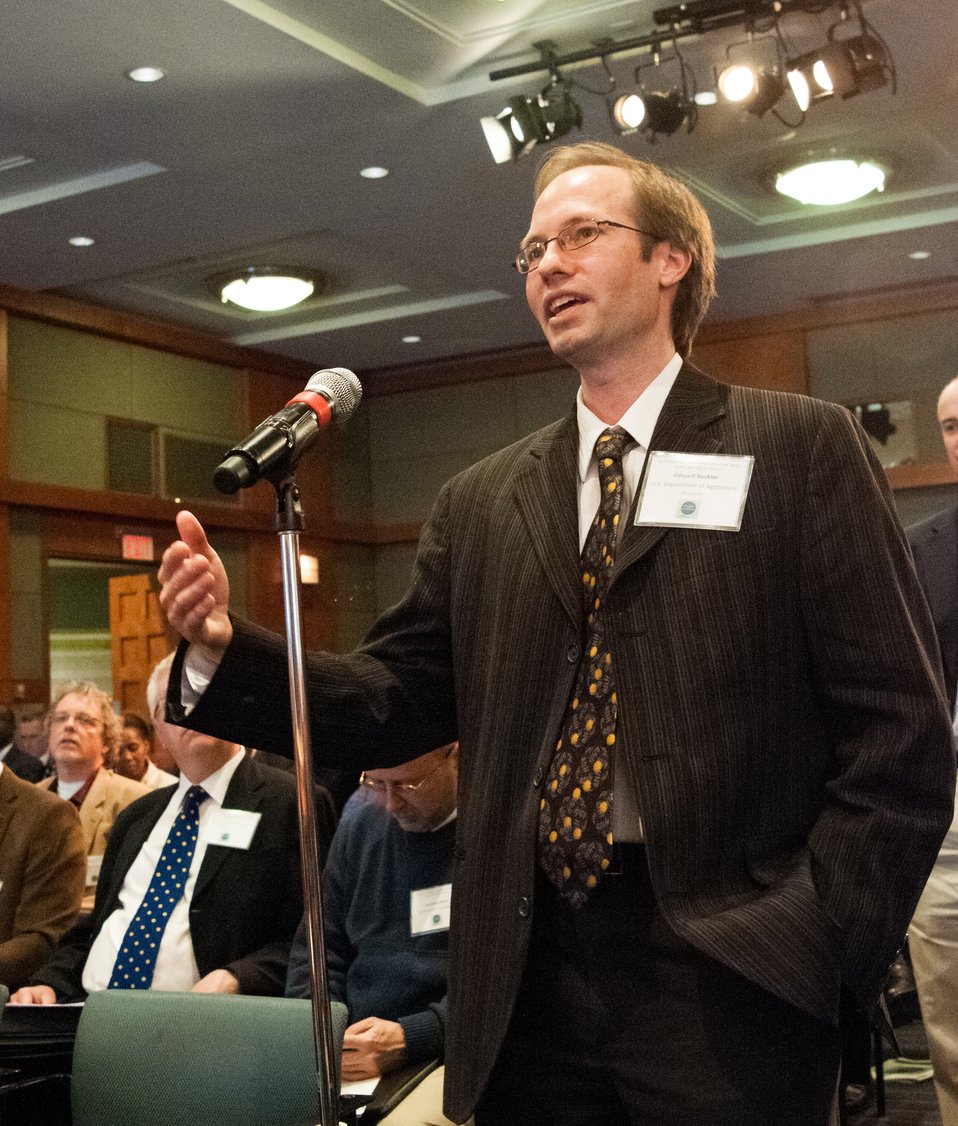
U.S. Department of Agriculture (USDA) Agricultural Research Service (ARS) research geneticist and an Adjunct Professor of Plant Breeding and Genetics at Cornell University Edward Buckler poses a question to panelists during the G-8 International Conference on Open Data for Agriculture in Washington, D.C. on Tuesday, Apr. 30, 2013. The conference launched a new 'virtual community' of Food, Agriculture, and Rural data on Data.gov-the U.S. Government's data sharing website-to catalogue America's publicly available agricultural data and increase the ability of the public to find, download, and use datasets that are generated and held by the Federal Government. The data community features a collection of more than 300 newly cataloged datasets, databases, and raw data sources related to food, agriculture, and rural issues from agencies across the U.S. Government. In addition to the data catalog, the virtual community shares a number of applications, maps and tools designed to help farmers, scientists and policymakers improve global food security and nutrition.